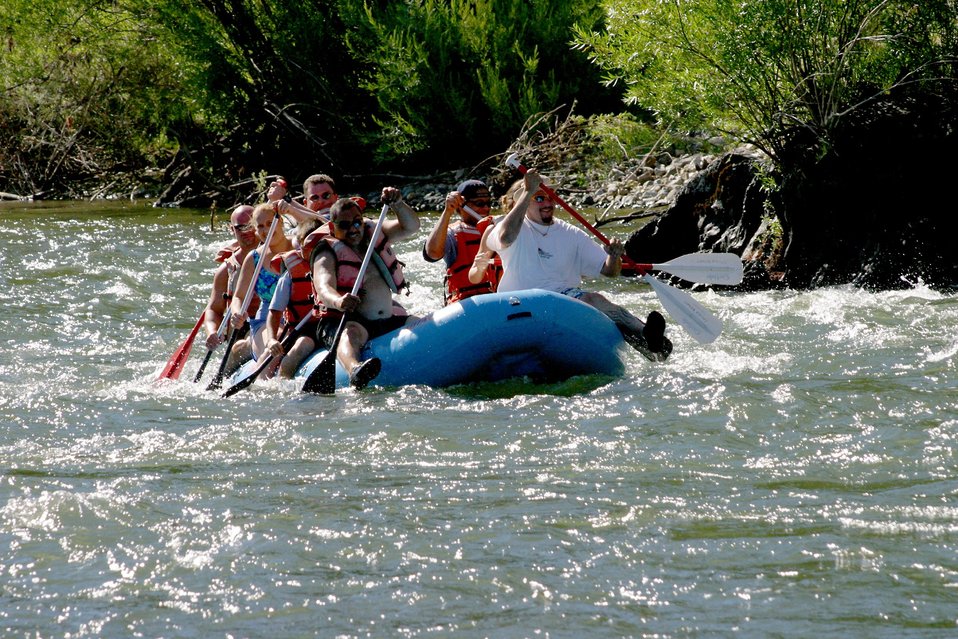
Boaters at Hog Creek